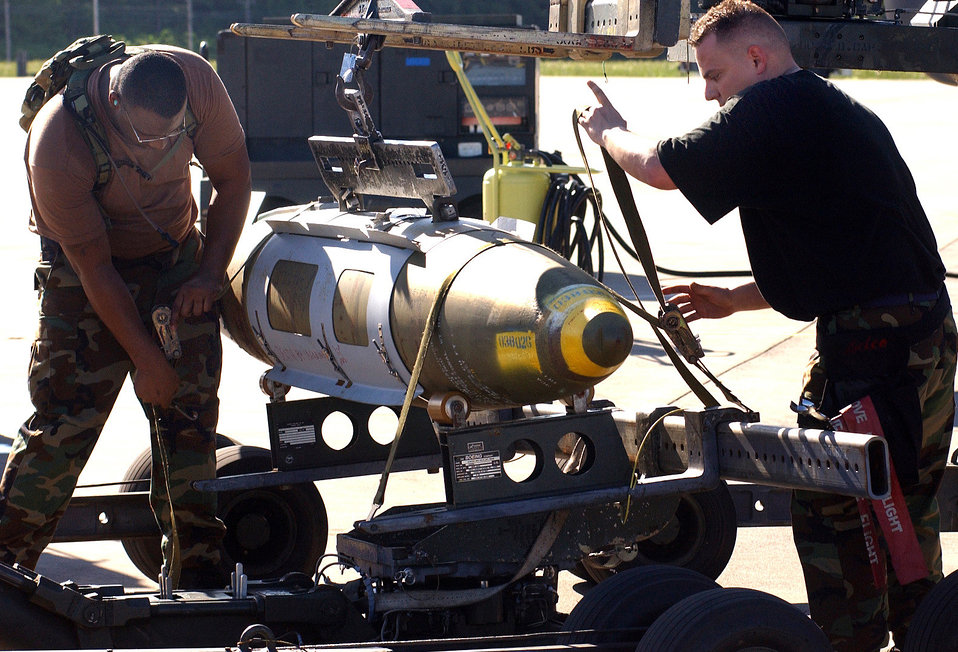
JDAM loading

OPERATION IRAQI FREEDOM -- Staff Sgts. Colby Davis (left) and Donald Veleo secure a 2000 pound Joint Direct Attack Munition to a lift April 2 in support of Operation Iraqi Freedom. Operation Iraqi Freedom is the multi-national coalition effort to liberate the Iraqi people, eliminate Iraqi's weapons of mass destruction and end the regime of Saddam Hussein.